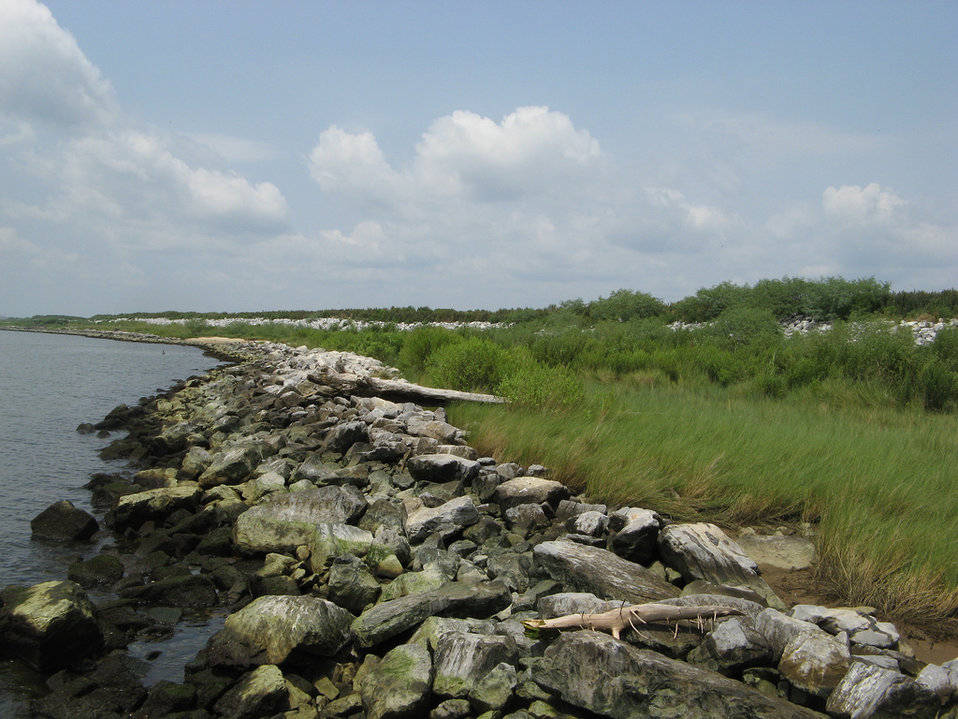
Alabama Gaillard Island Shore, Michael Assenmacher, USFWS